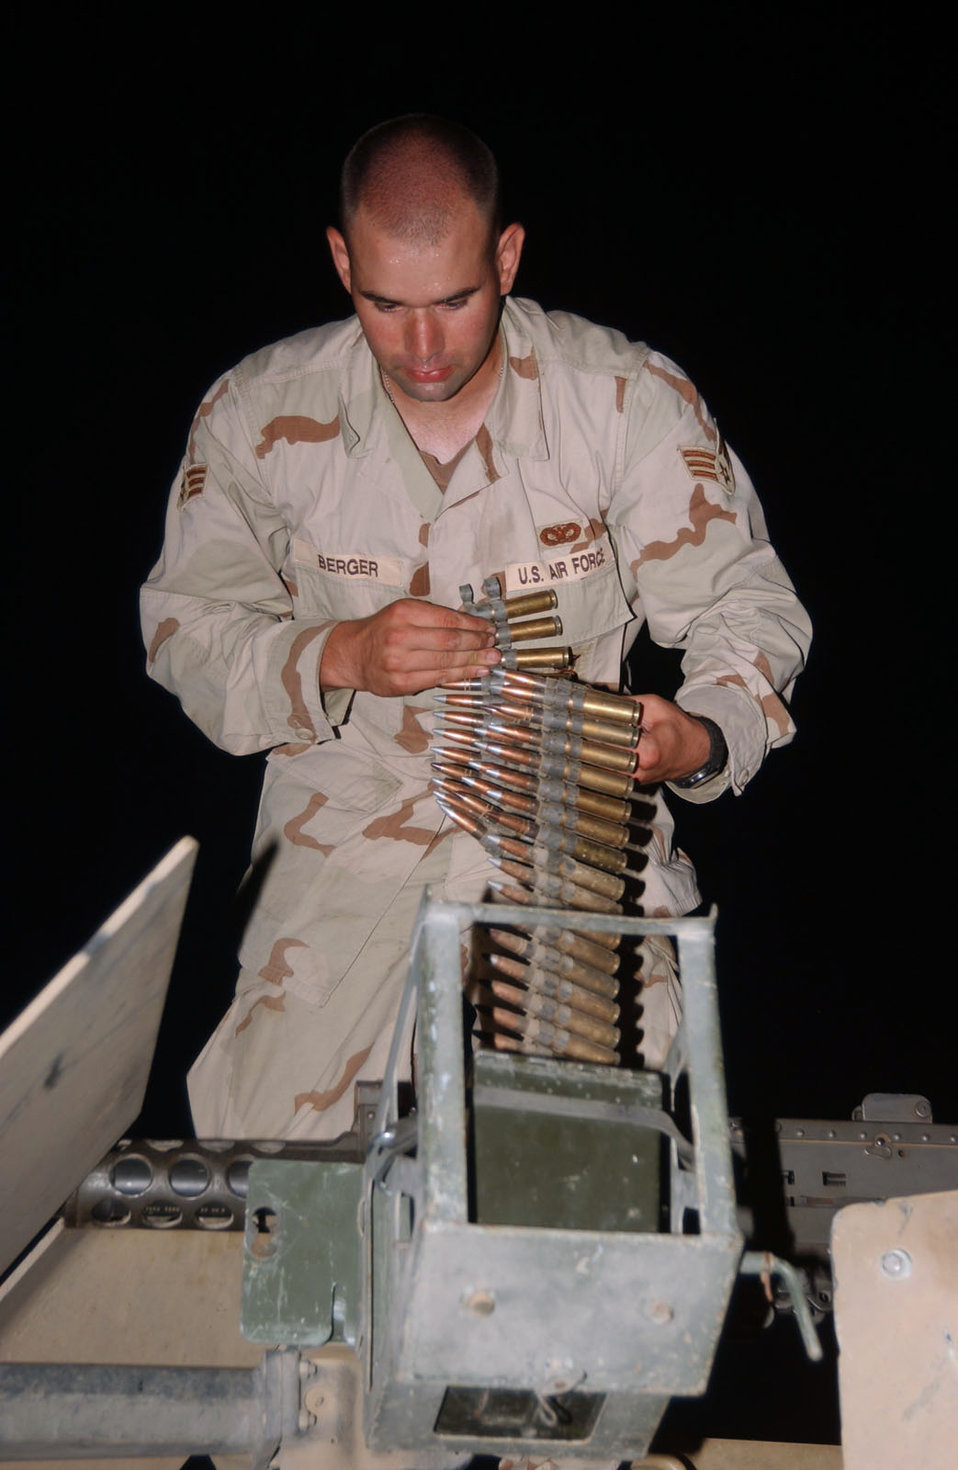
Convoy Airmen protect supply lines in Iraq

BALAD AIR BASE, Iraq -- Senior Airman Clint Berger loads ammunition before going out on a convoy. His unit provides convoy protection to civilian contractors and Army units delivering supplies throughout the area of responsibility. He is a gun truck operator with the 732nd Expeditionary Mission Support Group's Detachment 2632.